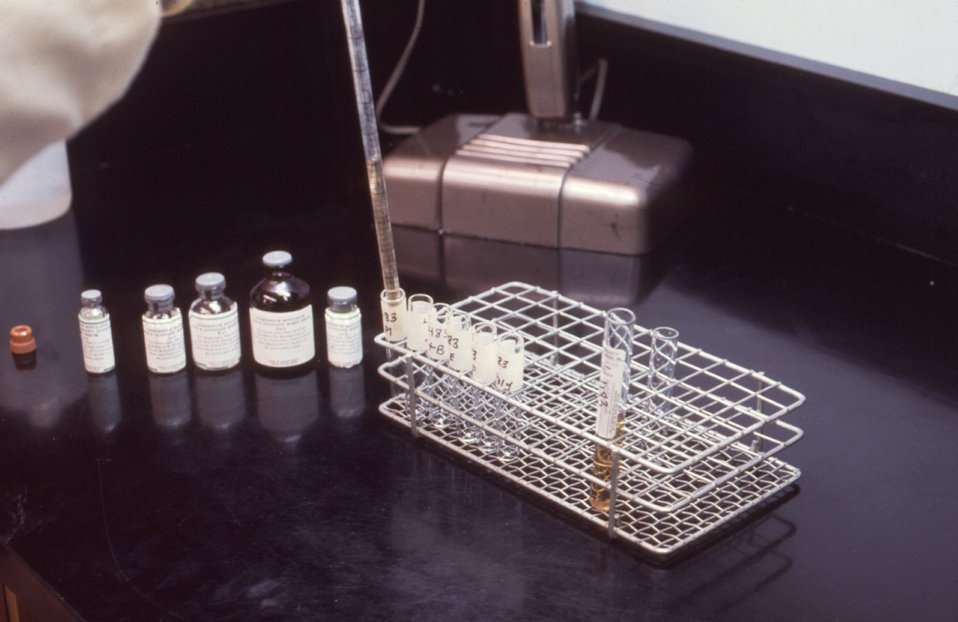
This laboratorian is preparing specimens in order to confirm the presence of botulinum toxin.